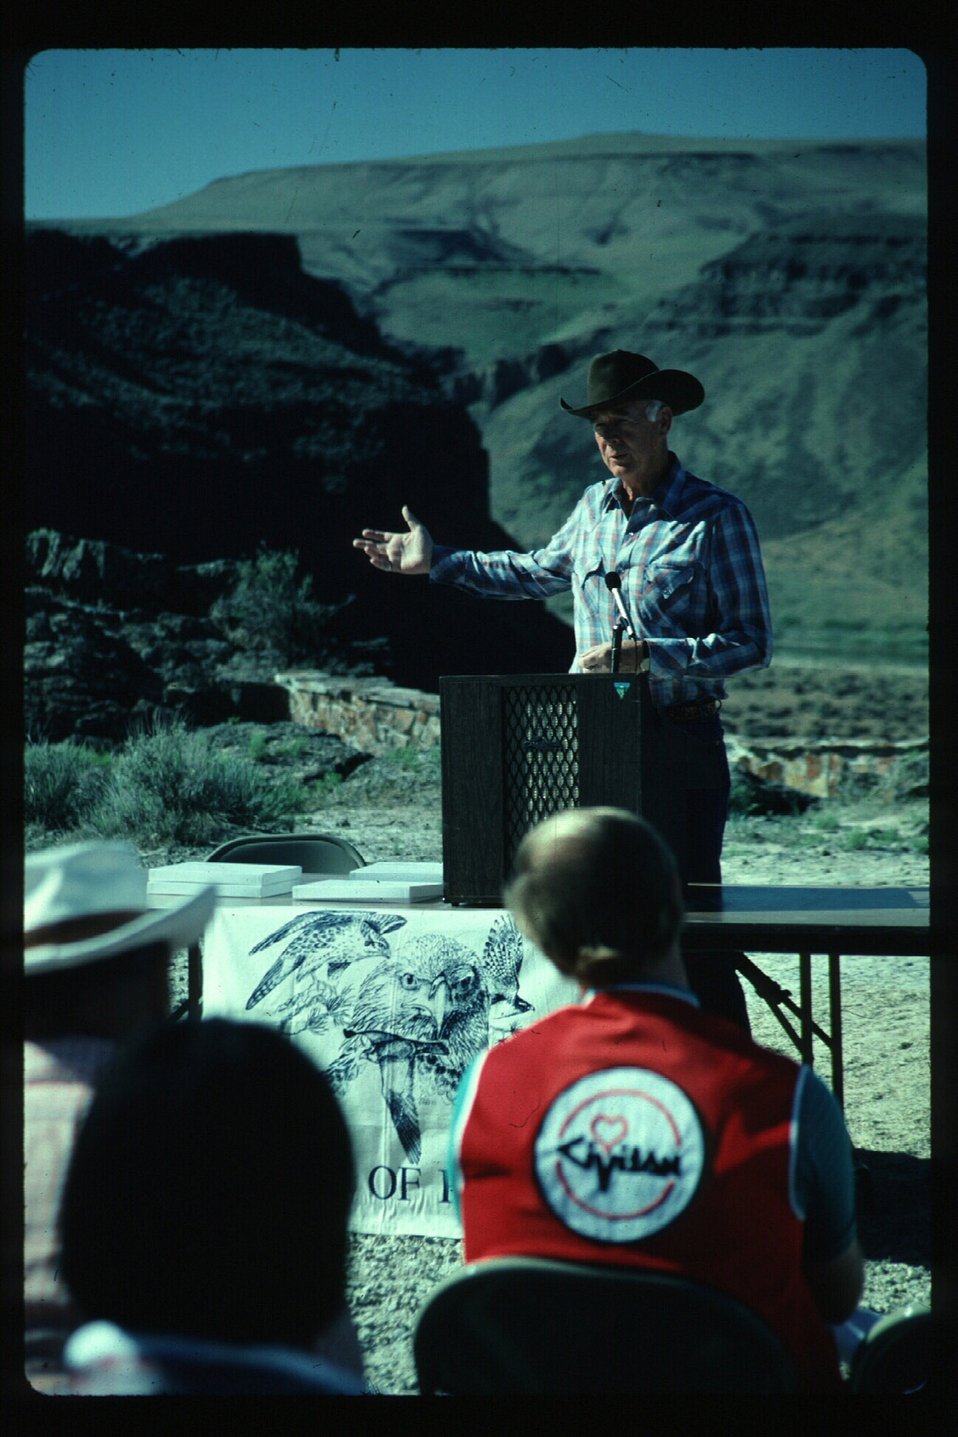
Governor Andrus at Dedication Point Ceremony Birds of Prey National Conservation Area BOP NCA Owyhee Field Office LSRD Lower Snake River District